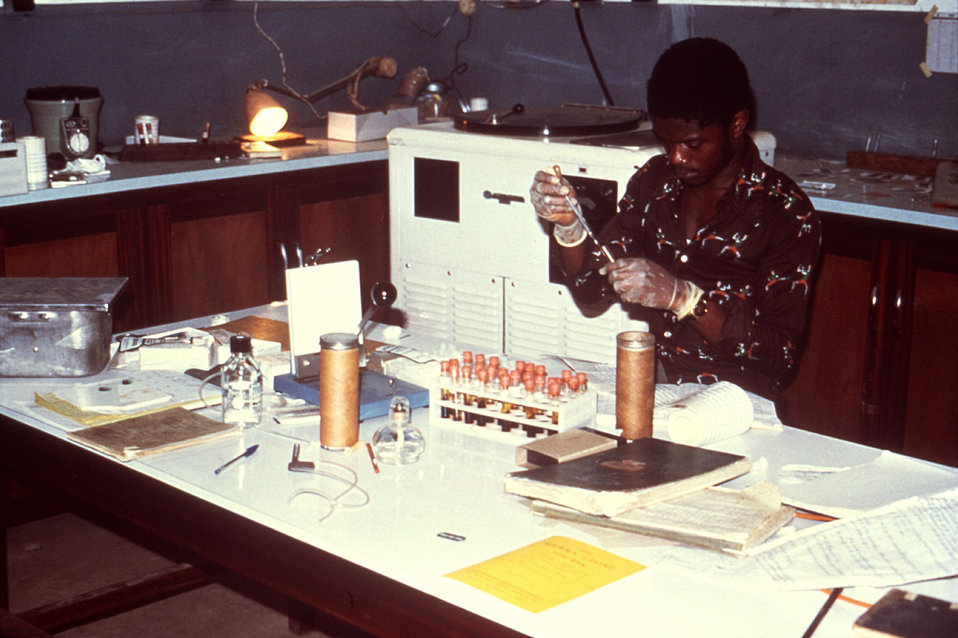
This was Jusu as he separated blood sera in the Segbwema, Sierra Leone Lassa fever laboratory in 1977.